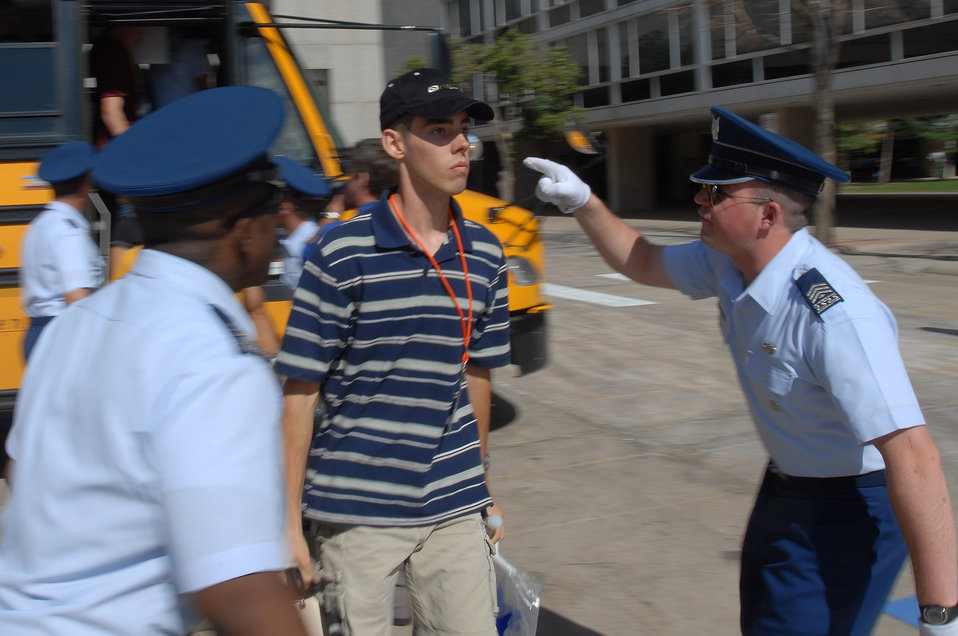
Class of 2012 arrives at Academy

A basic cadet is welcomed to the Core Values Ramp after exiting a bus during inprocessing as the Class of 2012. June 26 at the U.S. Air Force Academy, Colo. Inprocesing marks the start of 38 days of Basic Cadet Training, which is designed to prepare basic cadet trainees for entry into the cadet wing.